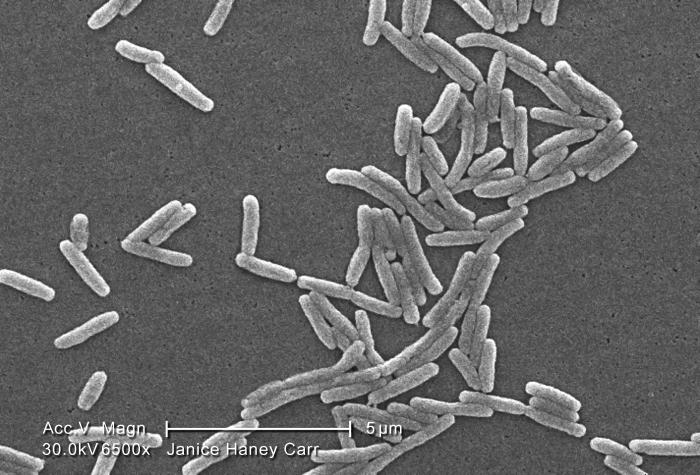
Under a high magnification of 6500X, this scanning electron micrograph (SEM) depicted a large group of Gram-negative Legionella pneumophila bacteria. Please see PHIL 11092 through 11152 for additional SEMs of these organisms, and specifically PHIL 11095 for a colorized version of this image.